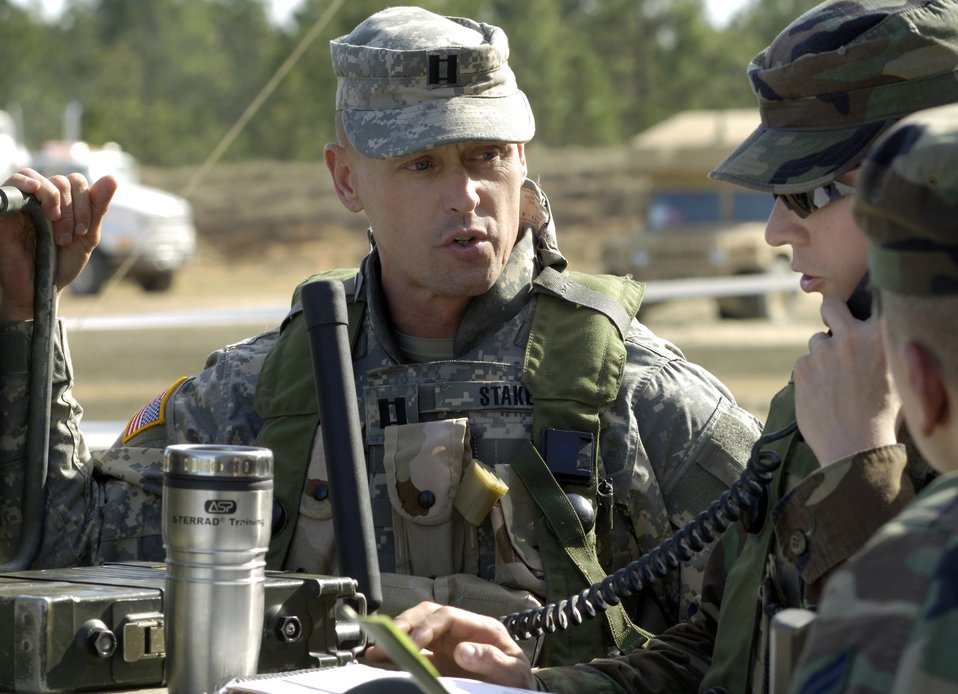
Air Warrior II

FORT POLK, La. (AFPN) -- Army Capt. Jeff Staker coordinates air power support with Tech. Sgt. Dan Kurtin during an Air Warrior II exercise Feb. 9. Sergeant Kurtin is a Guardsman with the 169th Air Support Operations Squadron in Peoria, Ill. Captain Staker is an intelligence officer with the 1-133rd Infantry Battalion.